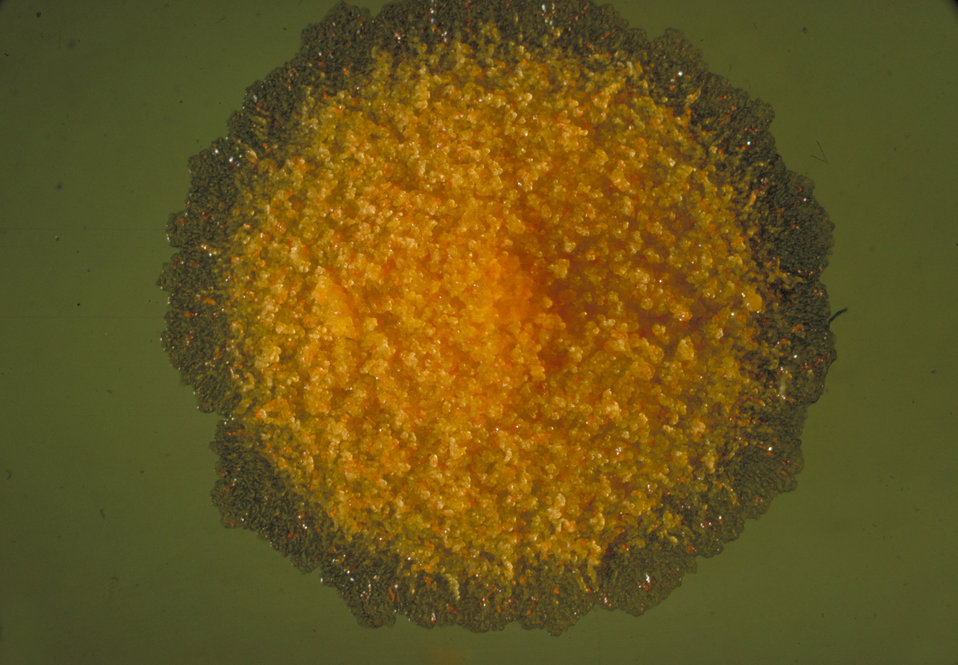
This plate culture of Mycobacterium balnei shows a rough colony of granular growth containing fine red pigment deposits.